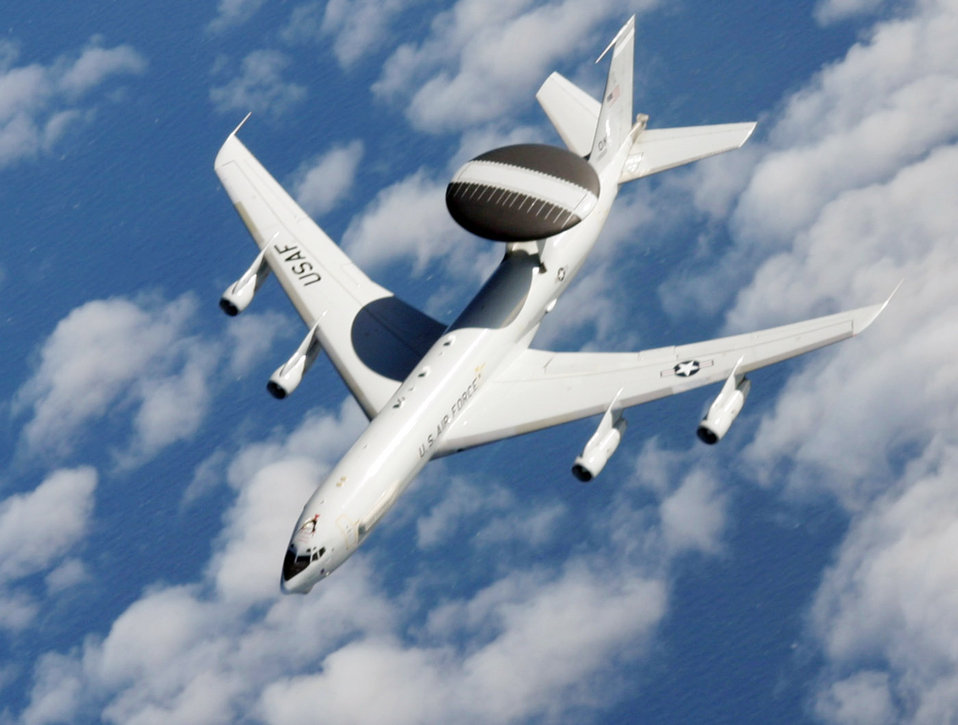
NATO AWACS proves interoperability during test

A combined Electronic Systems Center team from Hanscom Air Force Base, Mass., recently tested the joint interoperability of a prototype interrogator for an E-3 Sentry AWACS, such as the one shown here.